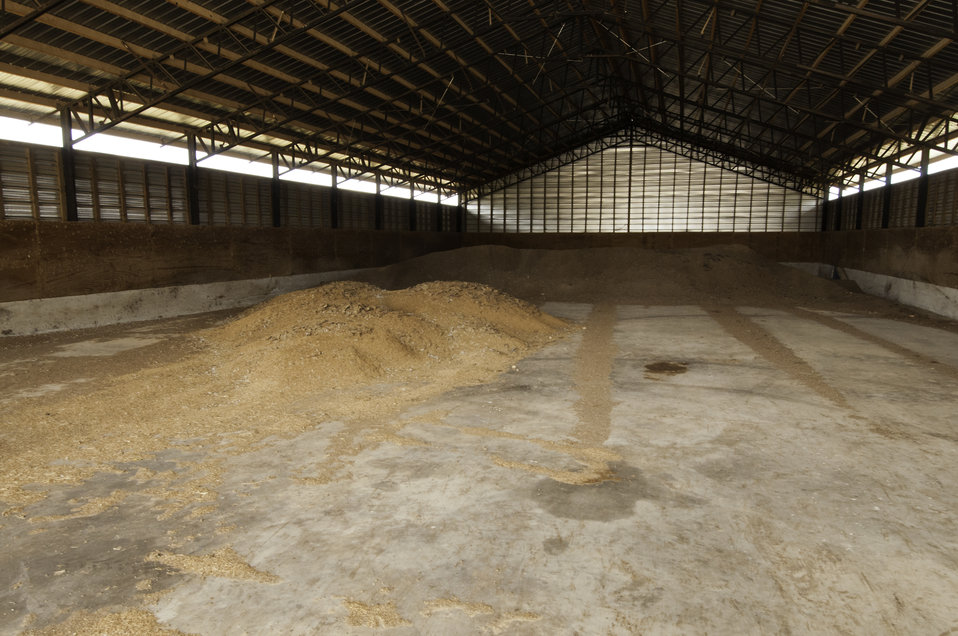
A dry stacking process is used to store solid poultry waste on the Bobby Morgan Poultry Farm in Luling, TX on Aug. 23, 2013.